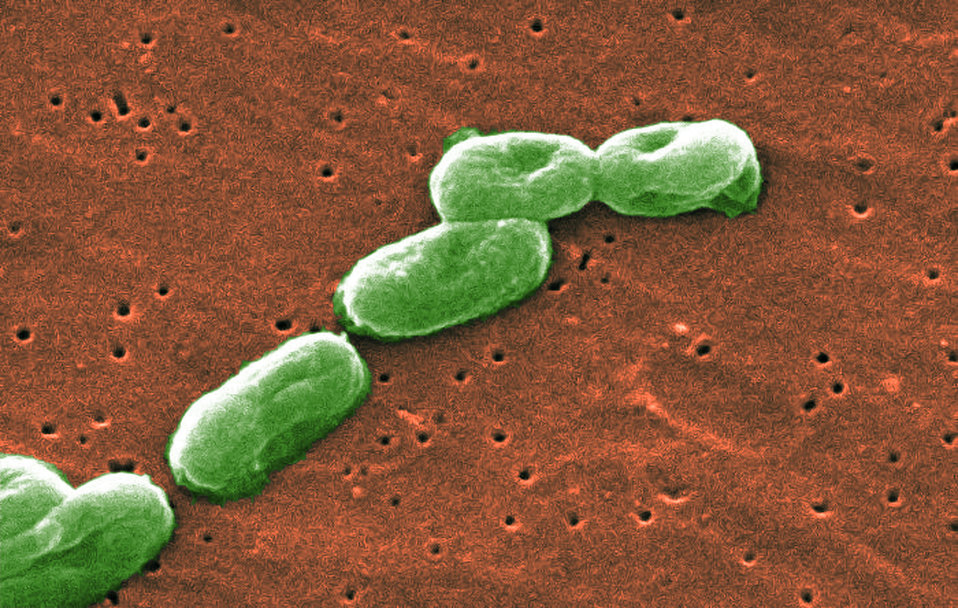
Scanning Electron Micrograph of Burkholderia cepacia. See PHIL 10608 for a colorized version of this image.